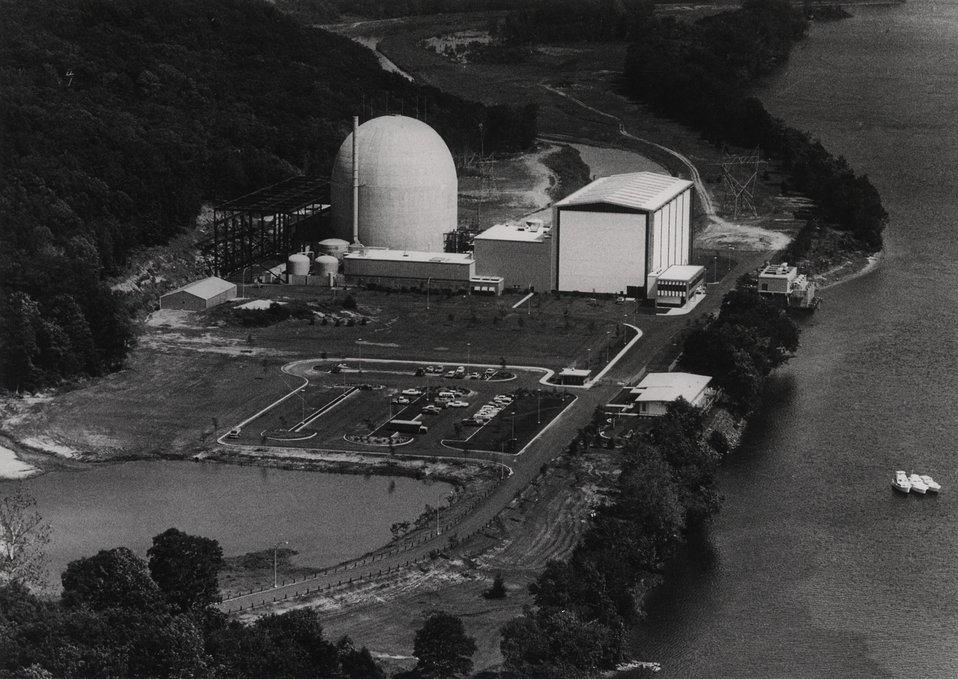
Haddam Neck Nuclear Plant